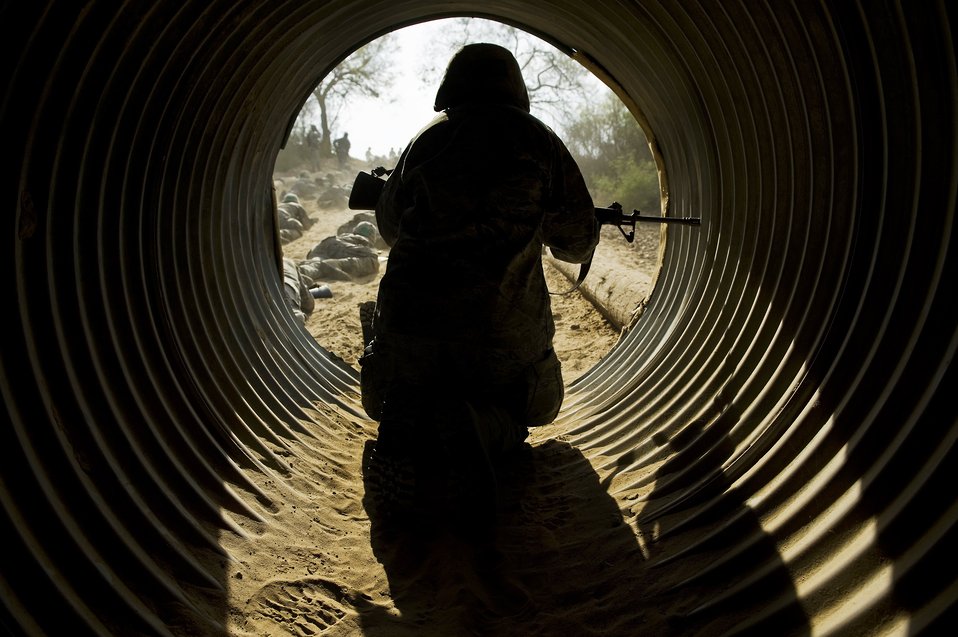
Trainees conquer the BEAST

A basic trainee prepares to enter the last leg of the tactical course at the Basic Expeditionary Airman Training course Sept. 2, 2009, at Lackland Air Force Base, Texas.